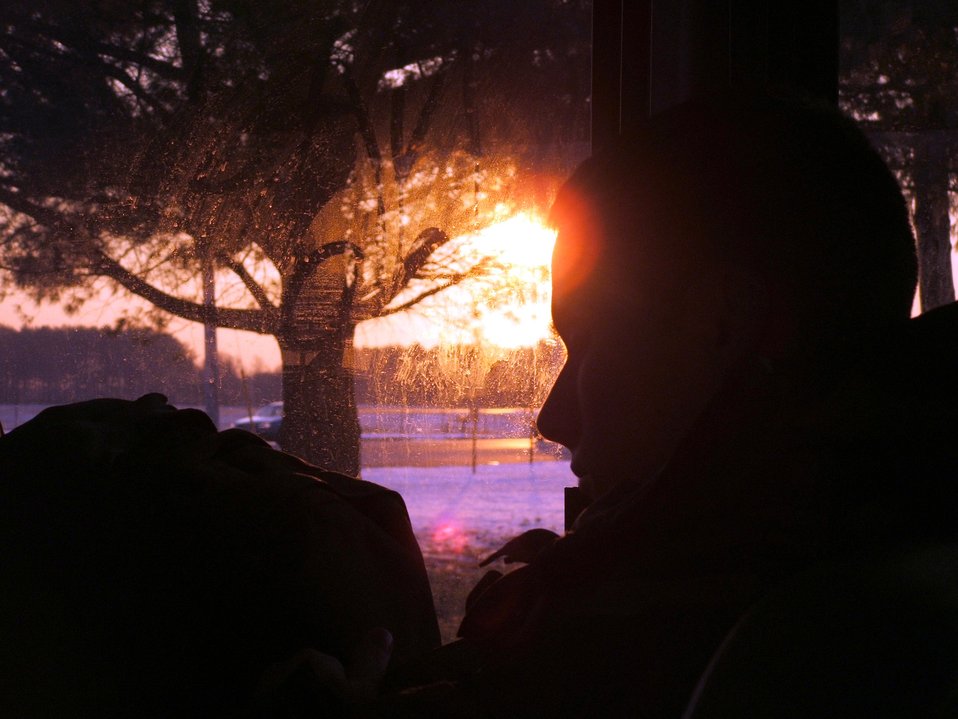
Learning the rules

FORT DIX, N.J. (AFPN) -- An Airman checks his tactical gear at sunrise before a day on the ranges. The Airman was a student in the Rules of Engagement/Rules of Use of Force Tactical Training Seminar held at the Air Mobility Warfare Center here Dec. 6 to 8.